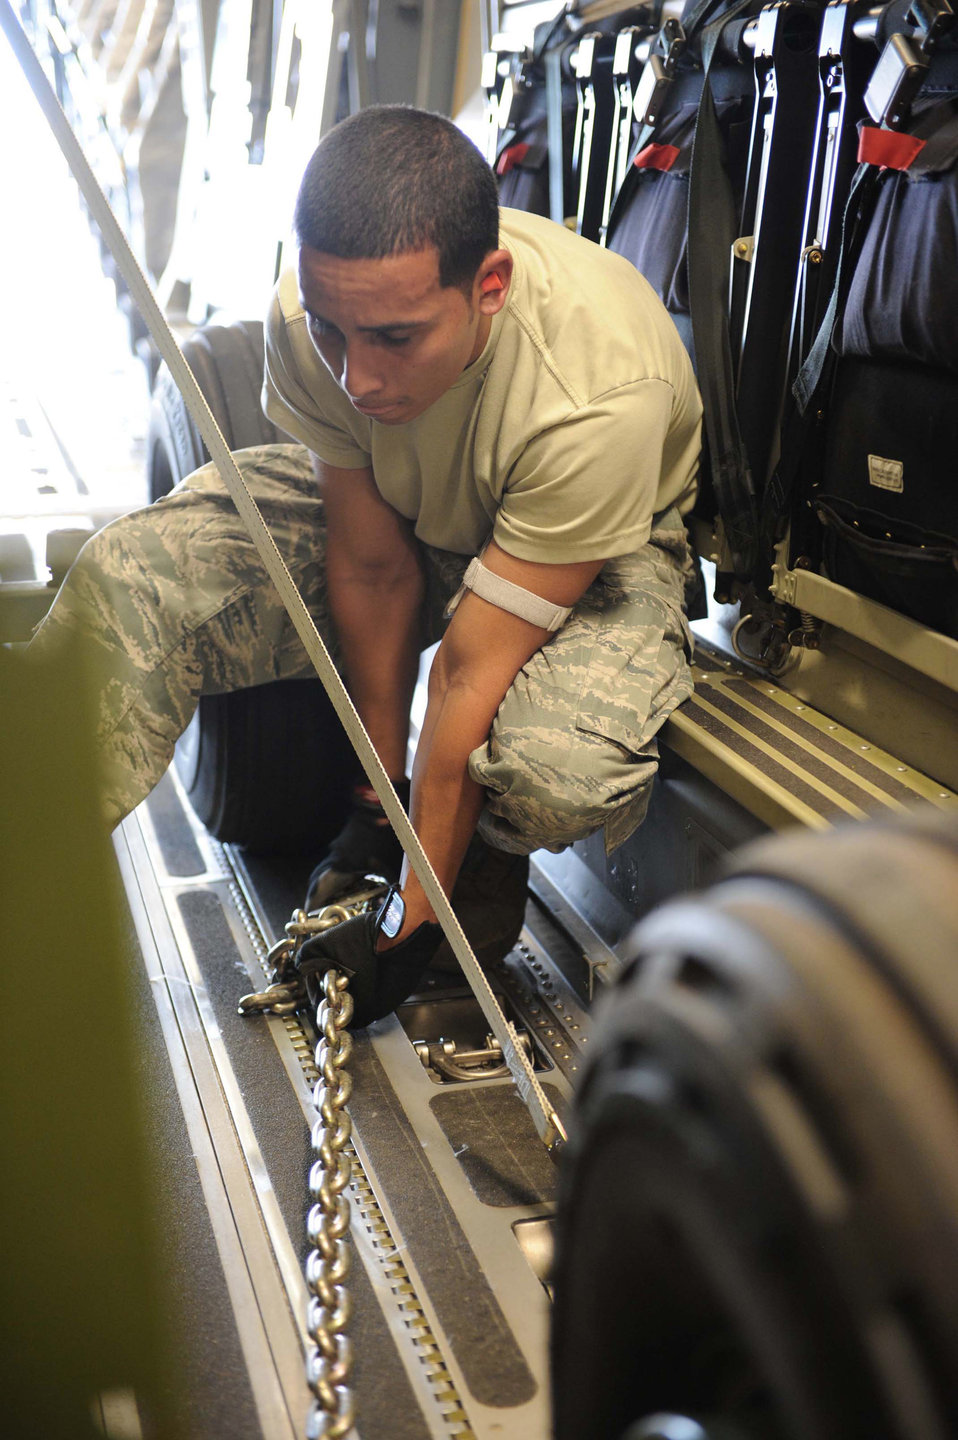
humanitarian mission to Japan

U.S. Air Force Airman 1st Class James Limon, a 735th Air Mobility Squadron ramp service specialist, secures a generator to the floor of a U.S. Air Force C-17 Globemaster III cargo aircraft at Joint Base Pearl Harbor-Hickam, Hawaii, in preparation for its departure on a humanitarian mission to Japan on March 12, 2011. The C-17 will be flown to various Air Force bases in Japan during its mission to provide support for Japan relief efforts in the wake of tsunami and earthquake damage there.